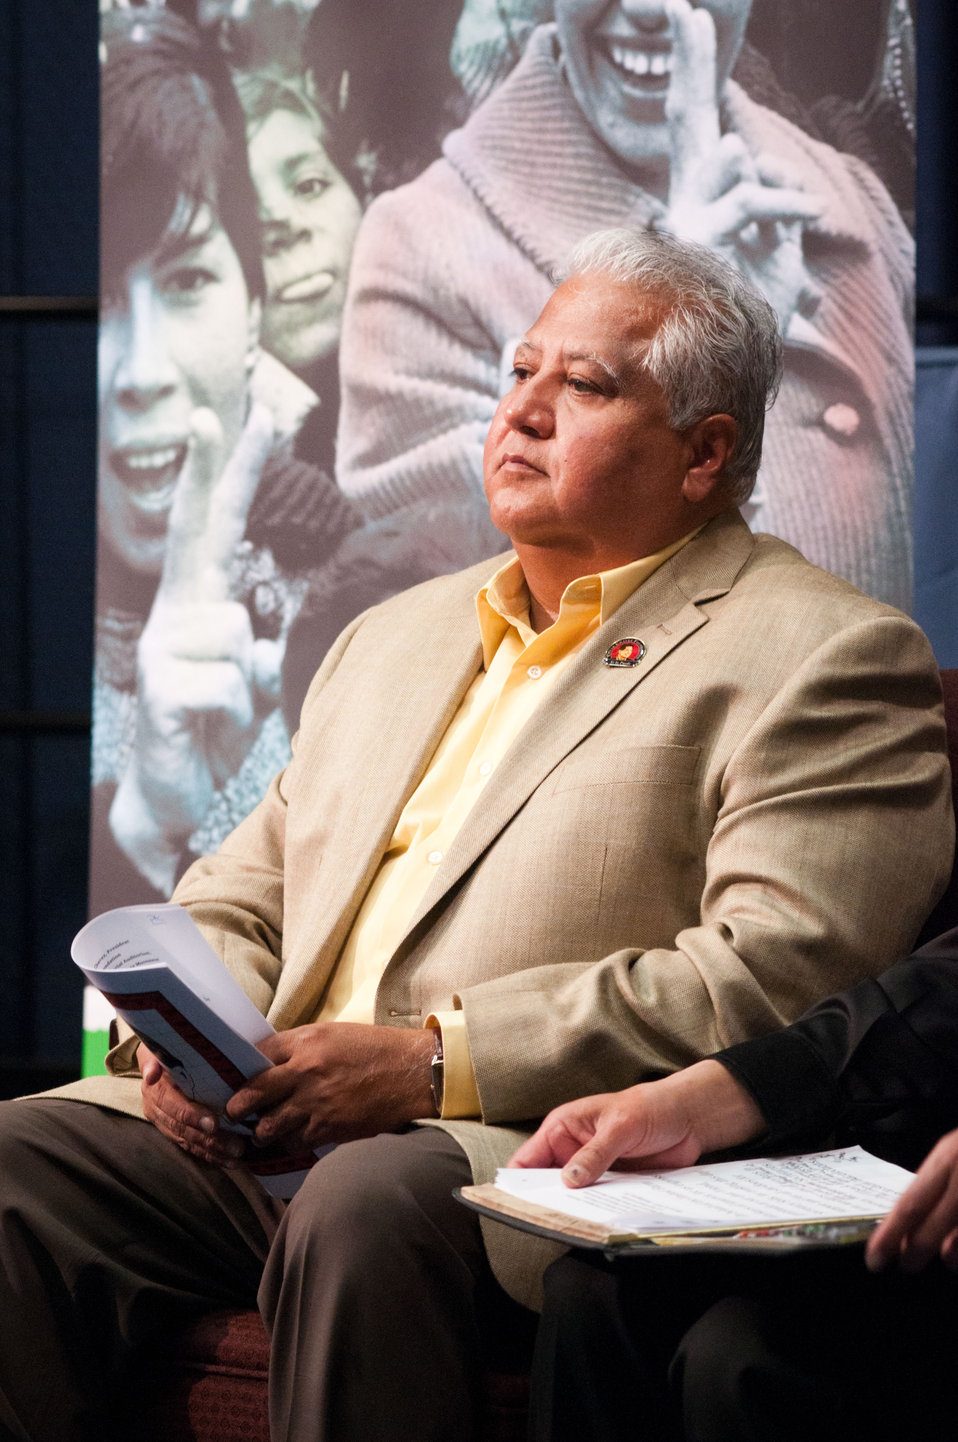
Paul Chavez listens to cabinet members, family and friends express their thoughts and reminiscence of his father Cesar Chavez, a Mexican-American labor leader who used non-violent methods to fight for the rights of migrant farm workers in the southwestern United States during the dedication of the Cesar E. Chavez Memorial Auditorium at the United States Department of Labor in Washington, D.C., Monday, March 26, 2012. Chavez founded the Cesar Chavez Foundation, a group that advocates for the rights of farm workers, acting to increase wages and improve the working conditions and safety of farm workers.